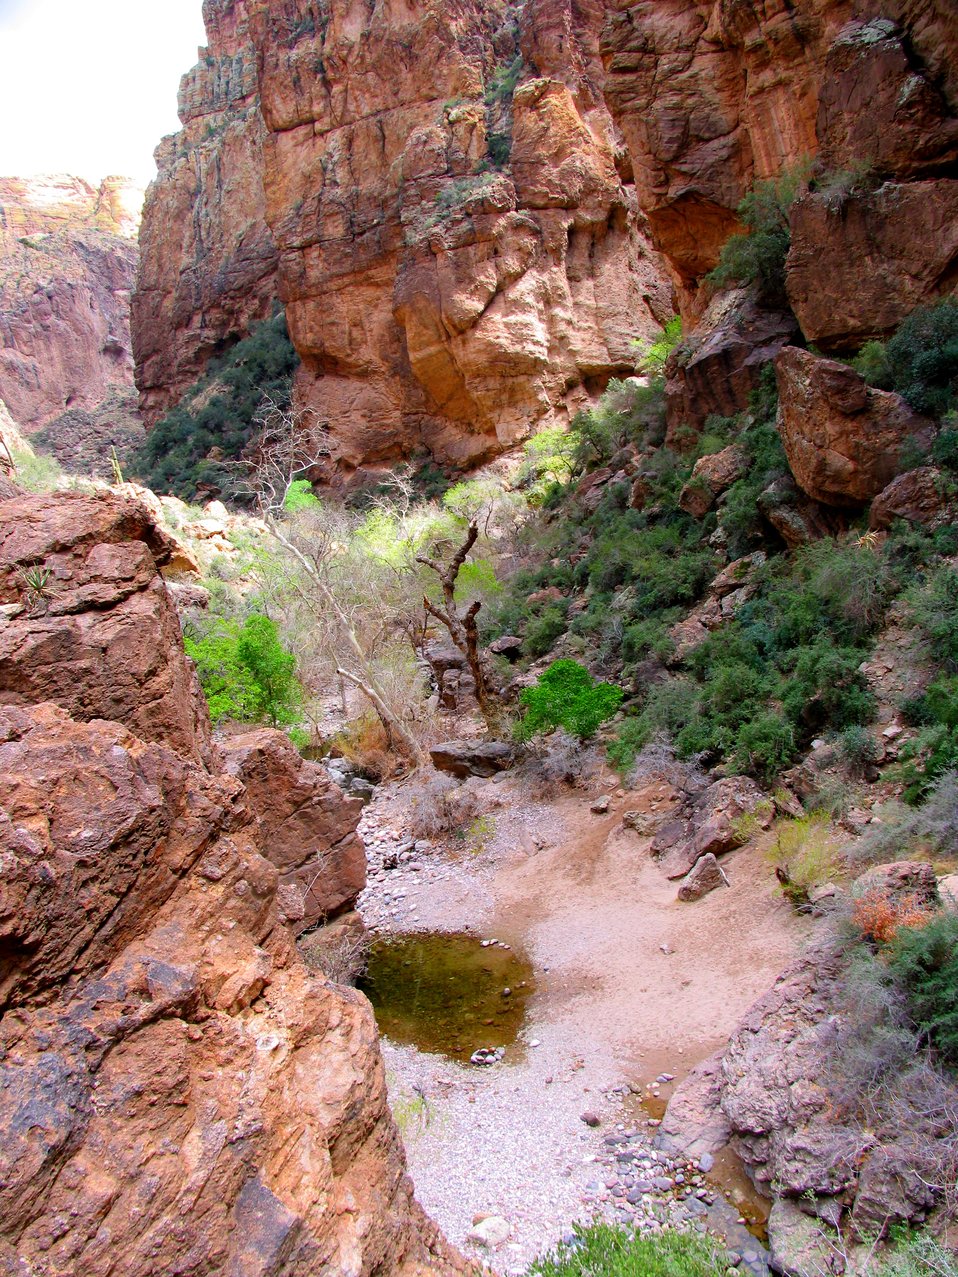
A pool of water, a remnant of the last rains, in a dry wash in Tonto National Forest.